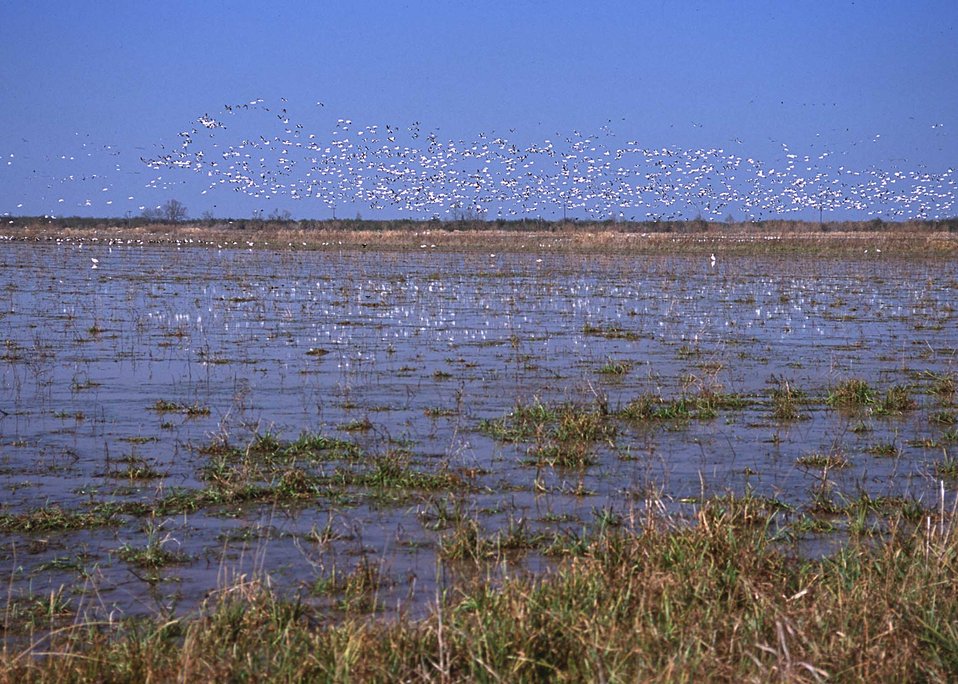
Flooded croplands near Gueydan, Louisiana attract thousands of geese in the winter.